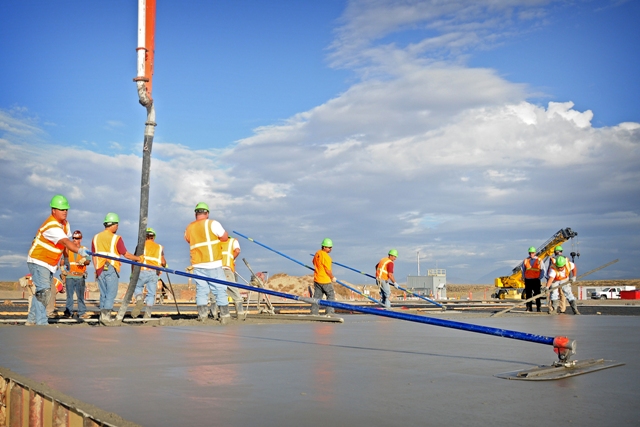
Idaho cleanup

Workers prepare the footings of a retrieval enclosure.